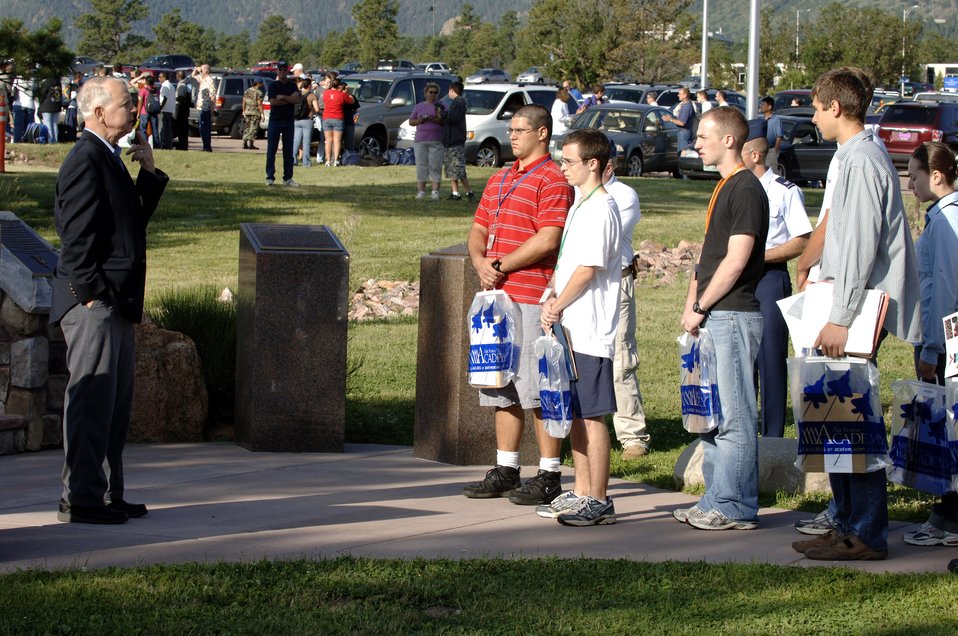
Welcome to the Air Force

Basic cadet trainees receive a briefing at the Challenge Bridge on the heritage trail behind Doolittle Hall from a retired Maj. Gen. Charles Pete as part inprocessing as the Class of 2011 June 28 at the U.S. Air Force Academy in Colorado. General Pete was in the U.S. Air Force Academy graduating class of 1959 . The 1,304 members arrived June 28 to begin basic cadet training.